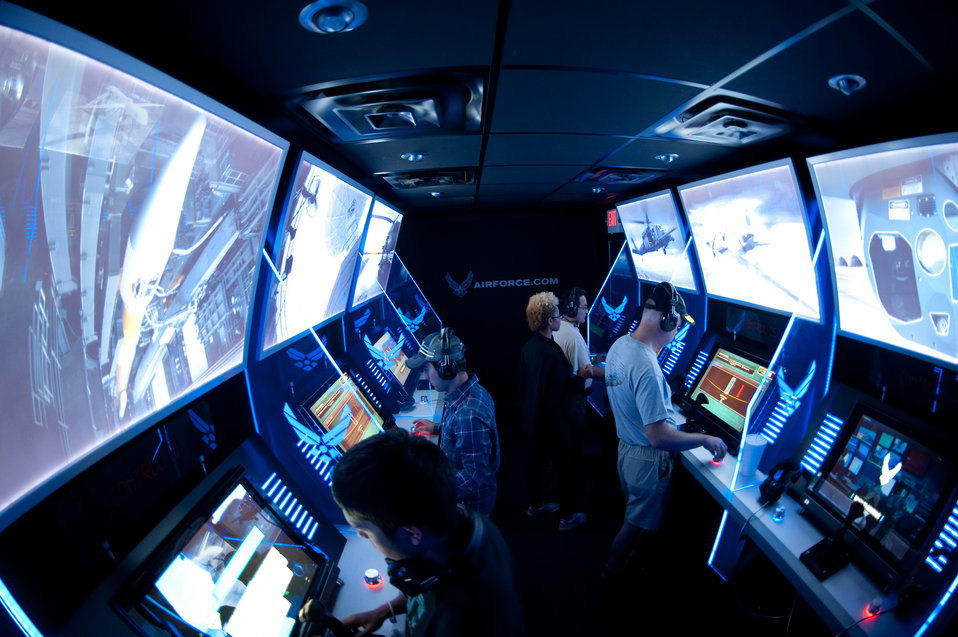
Air Force Week Now Showing in Times Square

Visitors at the Stealth Tour try their skills associated with combat controllers, explosive ordnance disposal teams or tactical air control party careers during an Air Force Week New York City exhibit in Times Square Aug. 26, 2010.